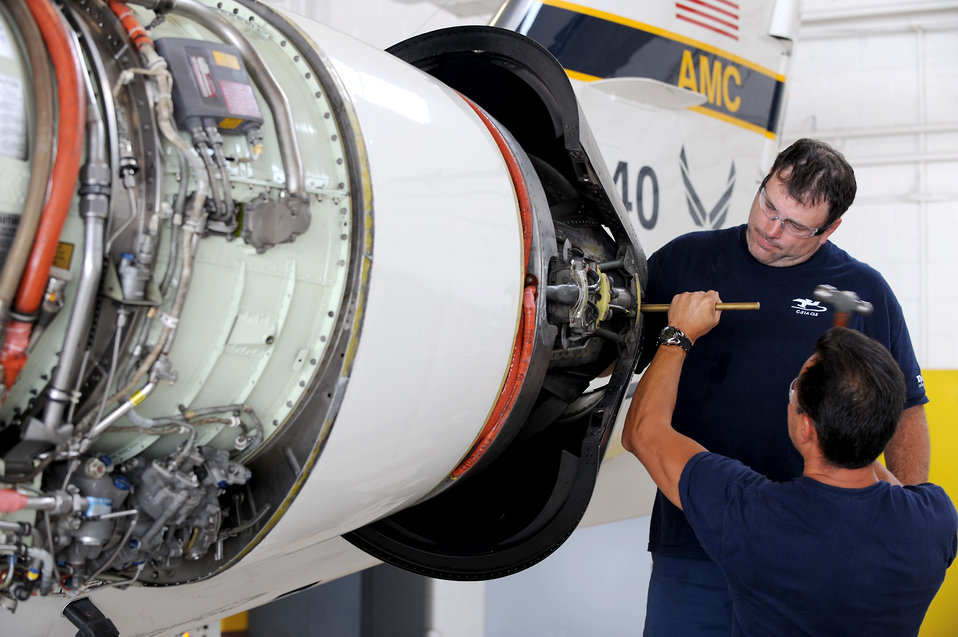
C-21 phase inspection

Eric Bollinger and Steve Edwards work on a C-21 during a phase inspection Sept. 15, 2010, at Scott Air Force Base, Ill. The phase inspections are done on aircraft after they reach flying milestones to ensure the aircraft remain in top condition.